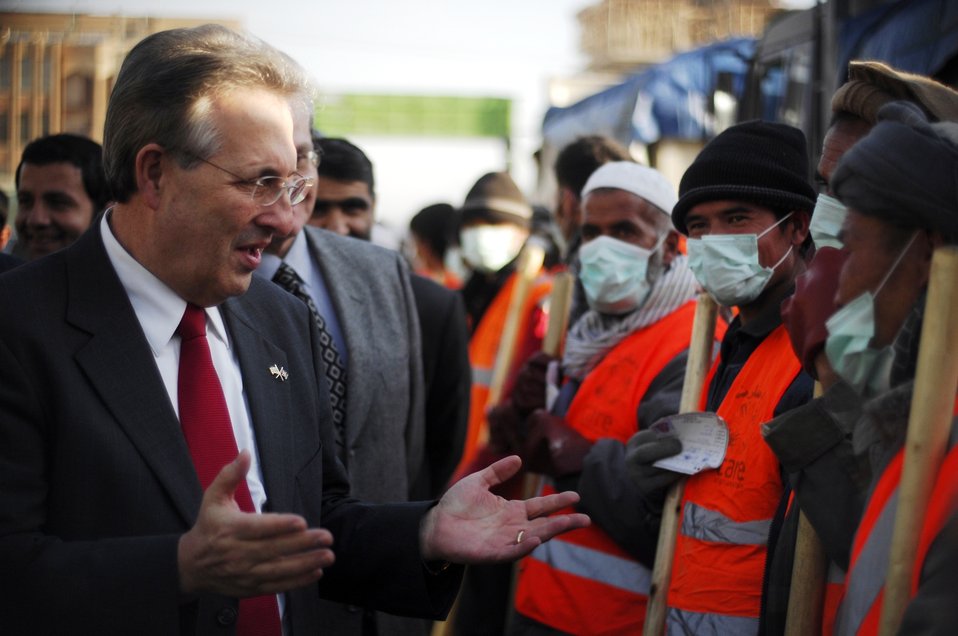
Care32